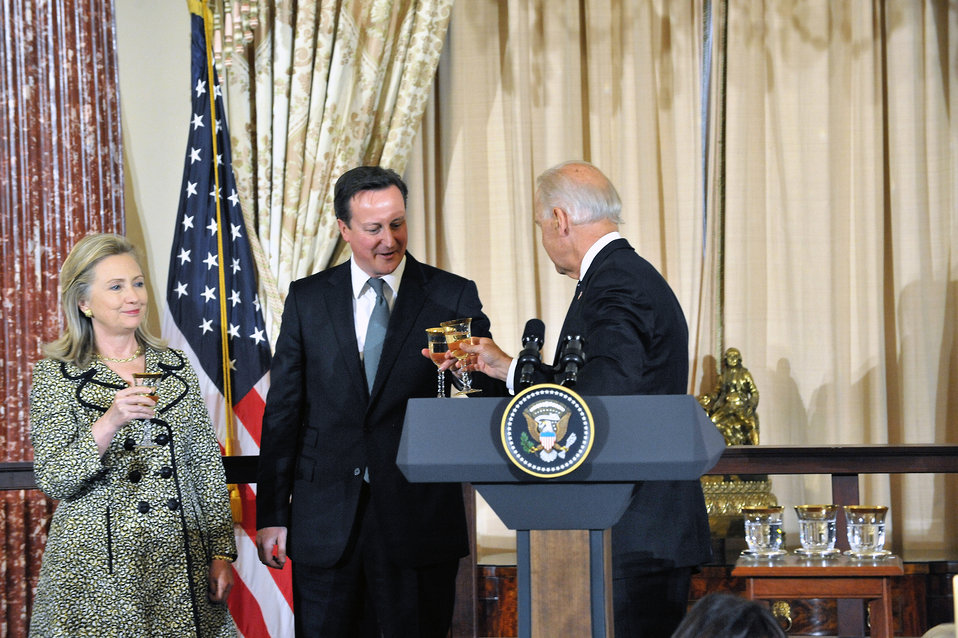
Vice President Biden Toasts the U.S.-UK Relationship

U.S. Vice President Joseph Biden toasts the U.S.-UK relationship with UK Prime Minister David Cameron and U.S. Secretary of State Hillary Rodham Clinton at the U.S. Department of State in Washington, D.C., on March 14, 2012.